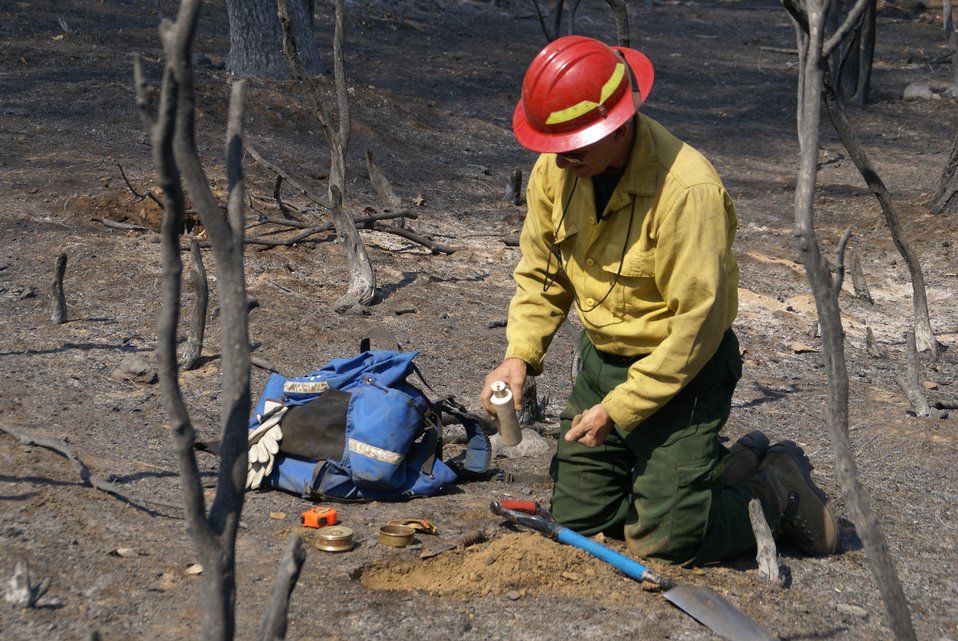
Burned Area Emergency Response (BAER) Brad Rust evaluates the soil on the Rim Fire. BAER teams start work even before the fire is completely extinguished at the Rim Fire. BAER is a rapid assessment of burned watersheds by a BAER team to identify imminent post-wildfire threats to human life and safety property and critical natural or cultural resources on National Forest System lands and take immediate actions to implement emergency stabilization measures before the first major storms. Fires result in loss of vegetation exposure of soil to erosion and increased water runoff that may lead to flooding increased sediment debris flows and damage to critical natural and cultural resources. BAER team members implement seeding and mulching installation to prevent erosion, erect temporary water run-off control structures that will protect recovering areas, and installation of warning signs, replace safety related facilities, remove safety hazards, prevent permanent loss of habitat for threatened and endangered species, and prevent the spread of noxious weeds and protect critical cultural resources. The Rim Fire in the Stanislaus National Forest near in California began on Aug. 17, 2013 and is under investigation. The fire has consumed approximately 256,169 acres and is 84% contained.